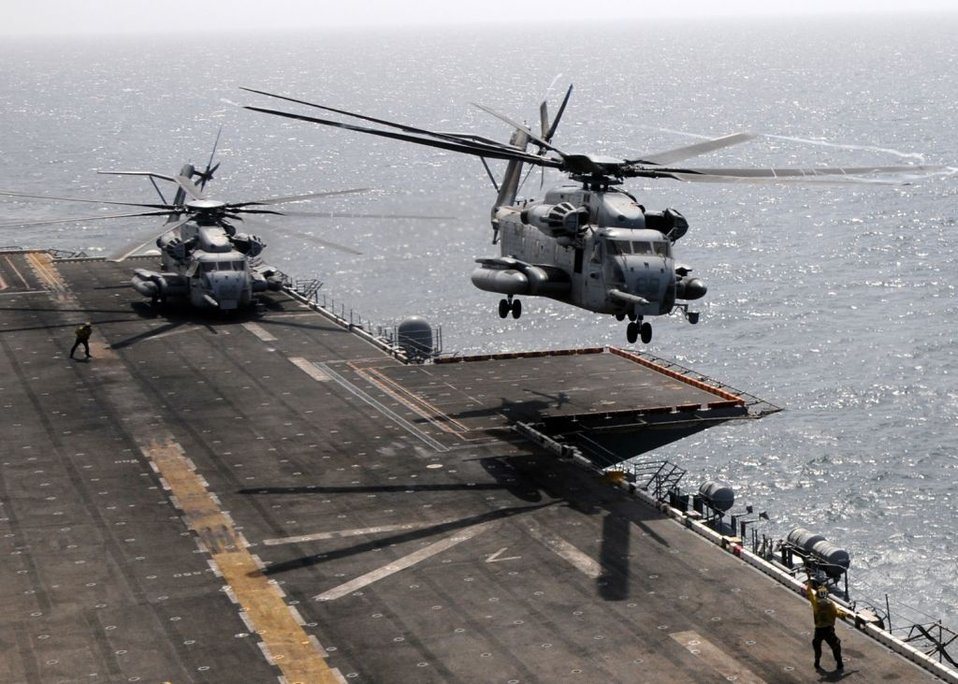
A Marine Corps CH-53E Sea Stallian Launches from the Flight Deck Aboard USS Peleliu (LHA 5)

Off the coast of Pakistan, a Marine Corps CH-53E Sea Stallion assigned to Helicopter Marine Medium Squadron 'White Knights' (HMM-165) (REIN) launches from the flight deck aboard USS Peleliu (LHA 5) on August 12, 2010. The passengers and cargo are the first wave to go ashore Pakistan in preparation of a mission to deliver relief supplies to flood-stricken regions. The CH-53E is loaded with tools, ground support equipment, communications gear and general supplies to support flight operations.